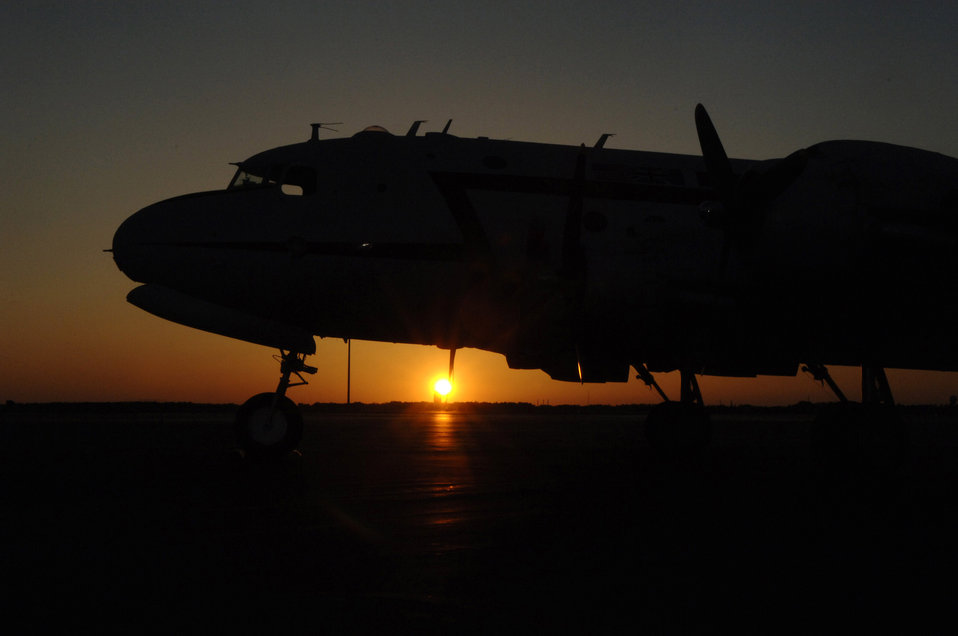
Phoenix Rally celebrates 60th Anniversary of Berlin Airlift

Retired Col. Gail Halvorsen and the crew of C-54 Skymaster